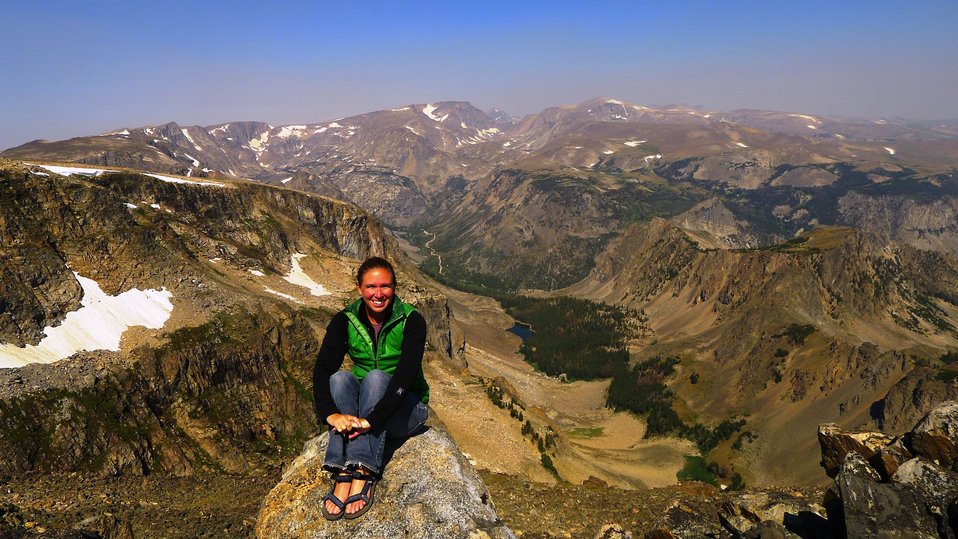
Erin Clark

FWS Wilderness Fellow Erin Clark enjoys the scenery along Montana's Beartooth Highway.